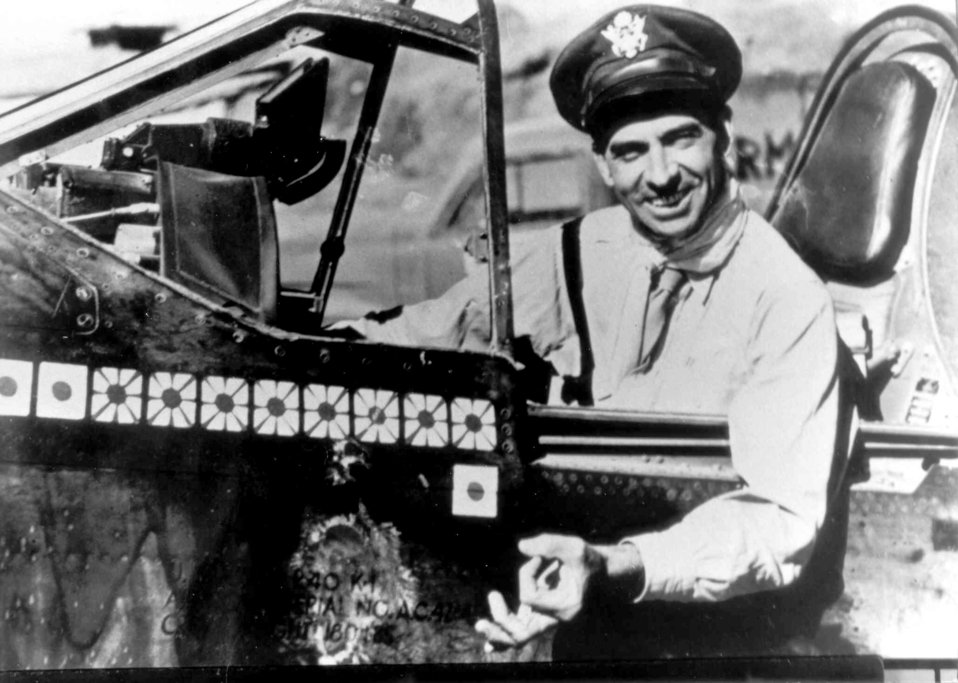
Brig. Gen. Robert L. Scott Jr. dies

Colonel Robert L. Scott Jr. in his P-40 Warhawk in 1943.